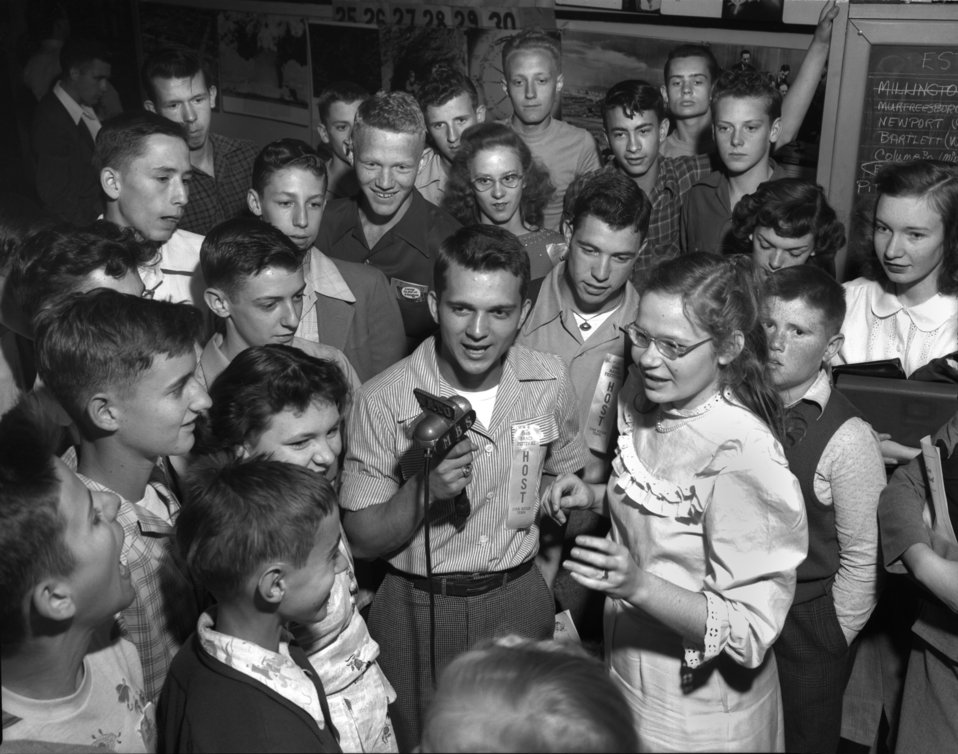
Tennessee State Band Festival Oak Ridge

004500-8b DOE photo Ed Westcott

Tennessee State Band Festival in Oak Ridge Tennessee 4/29/1948